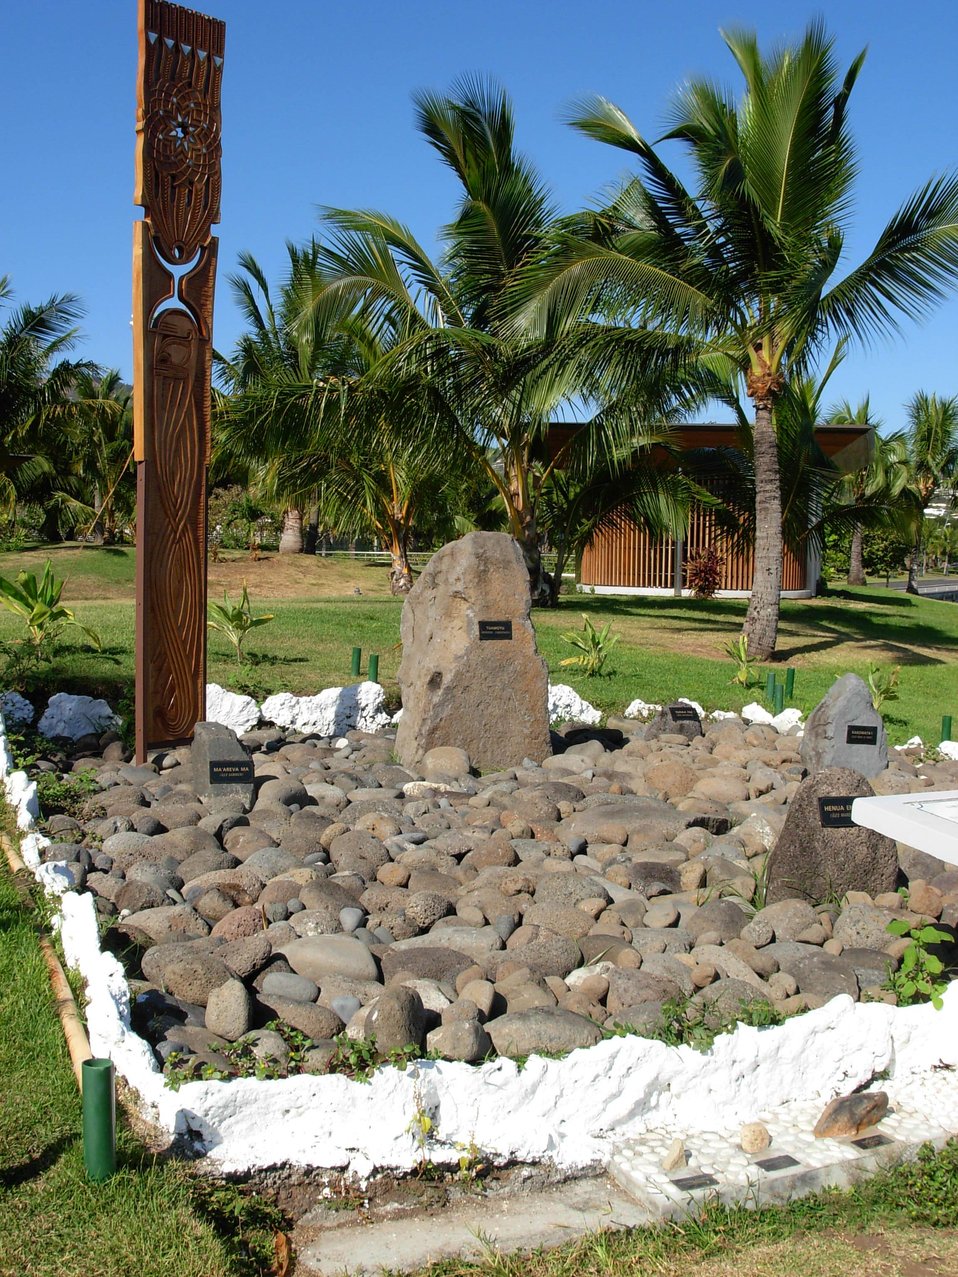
Memorial to victims of atomic weapons testing in French Polynesia.